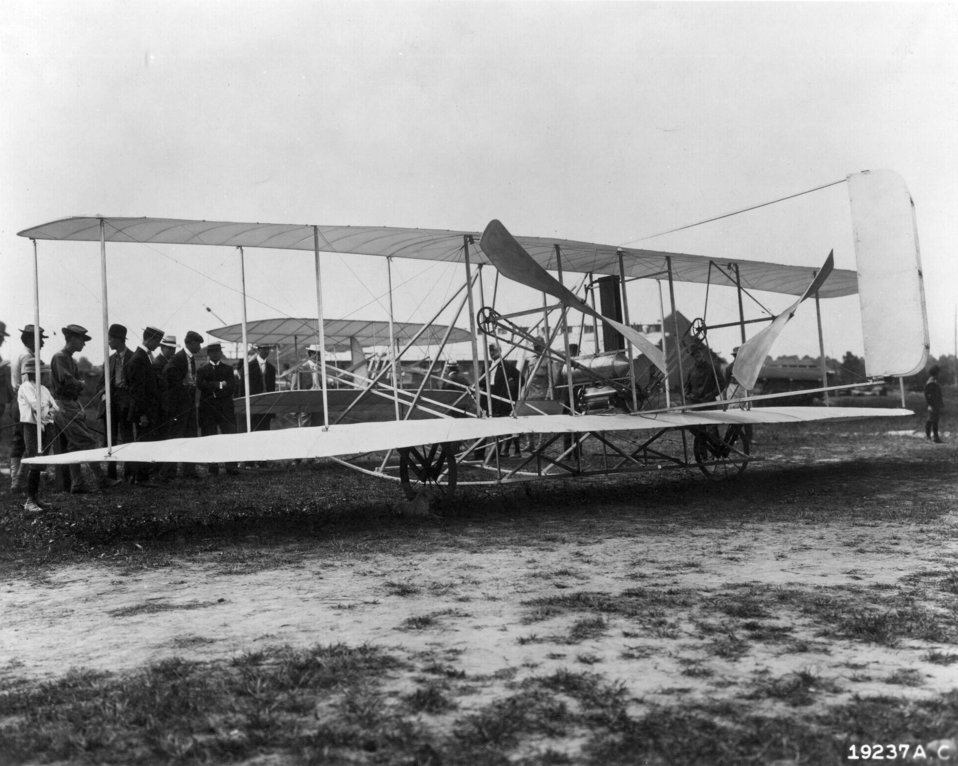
Wright Airplane

EARLY YEARS -- Wright Airplane at Ft. Myer, VA - Summer of 1908 - Orville Wright, pilot.